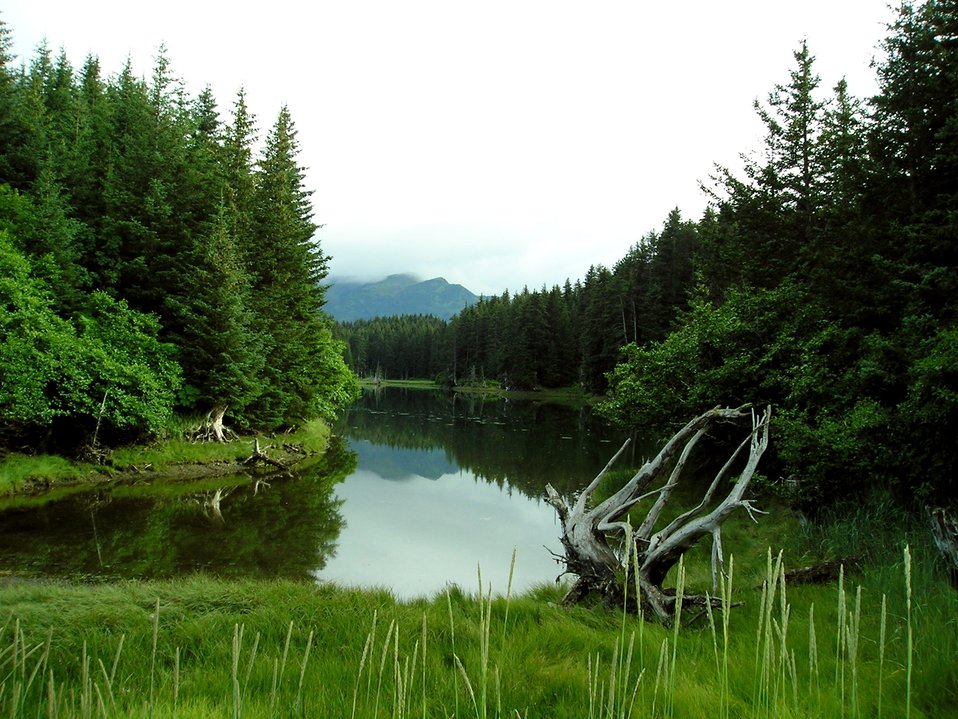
A tidal creek near the airport at Seldovia.